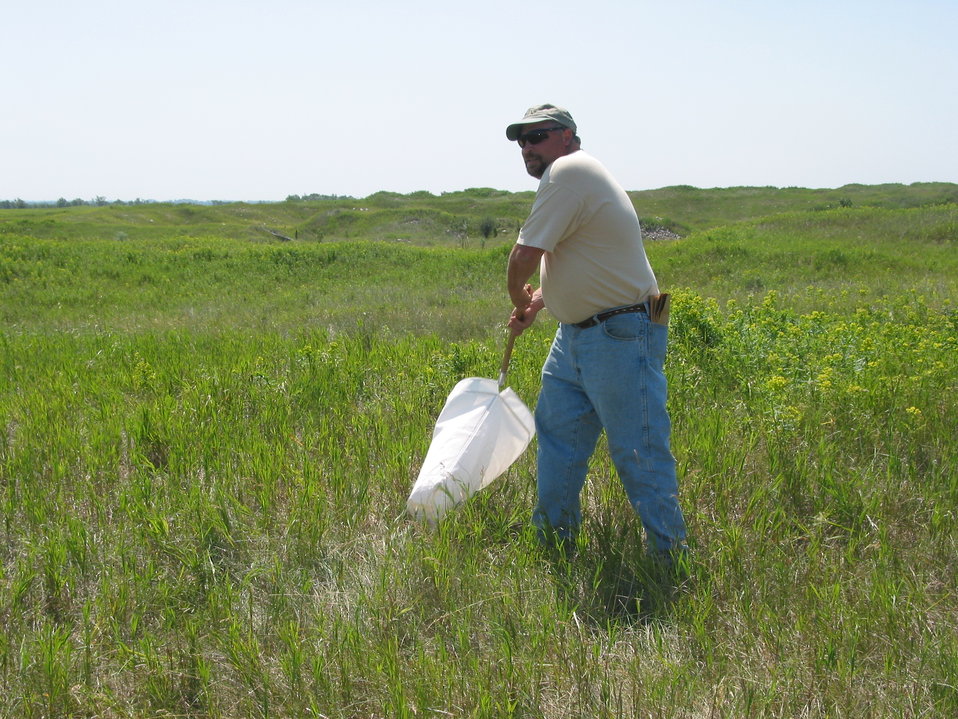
Collecting Flea Beetles

Leafy Spurge was introduced from Europe as an ornamental plant, but has spread to become a noxious weed in many states. Here, we collect flea beetles (a biological control to leafy spurge) by sweep netting. Beetles will be moved to newly found areas of spurge infestation.